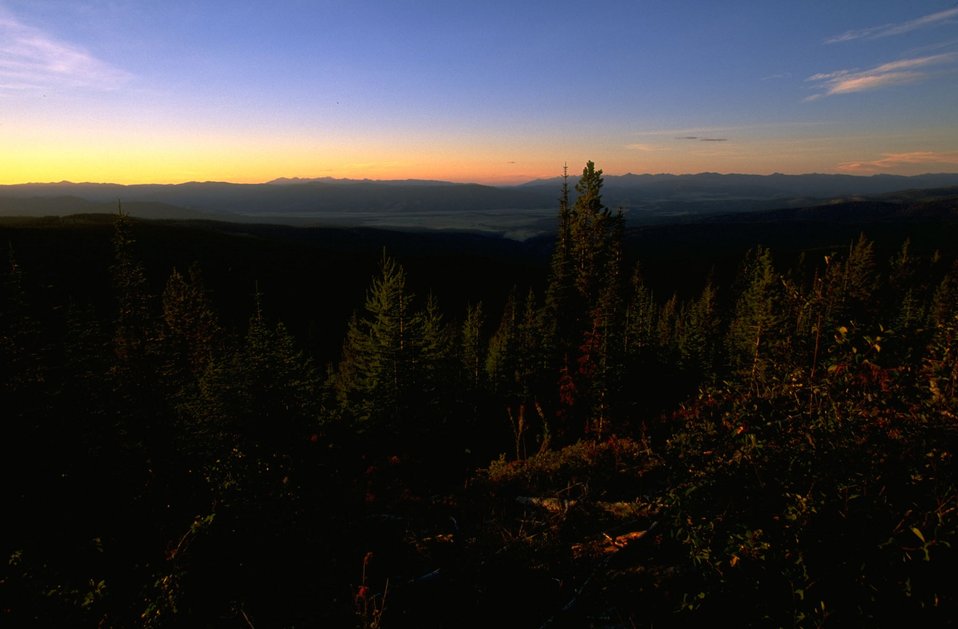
Garnet Back Country Byway view at sunrise